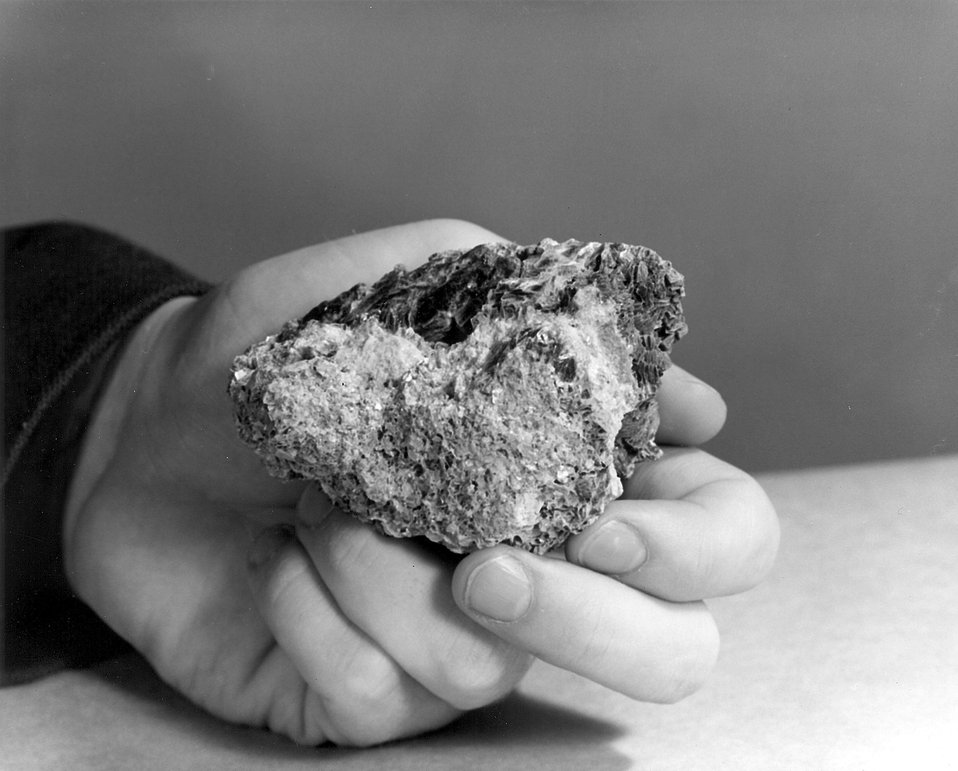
The United States atomic energy program is based on uranium which is obtained by processing an oxide of uranium (U3 O8) which is typically found in ores called pitch blends and carbonize, but another source is antiquate, a phosphate mineral. c. 1971